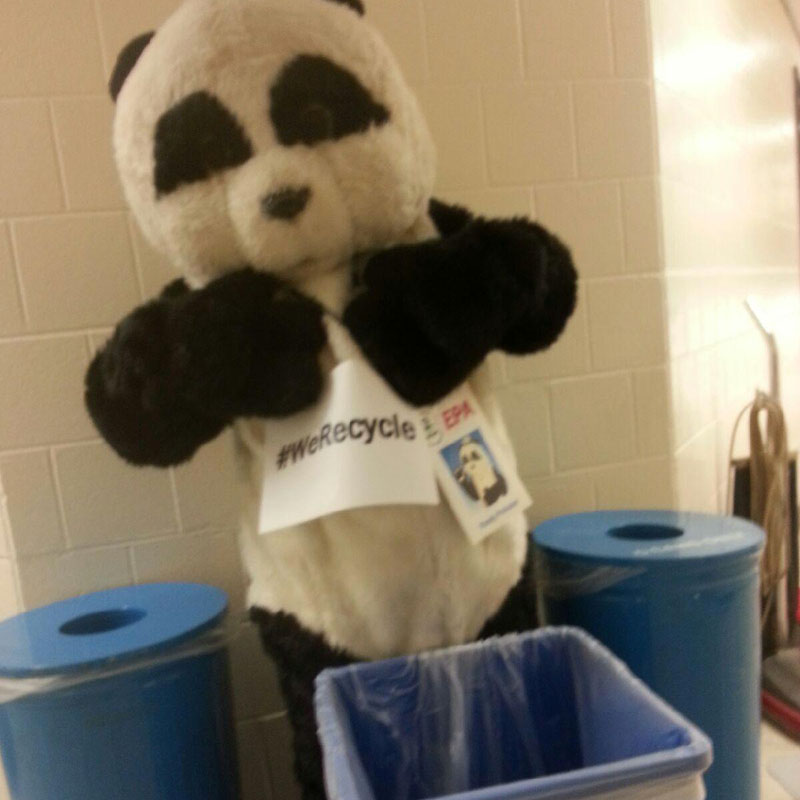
Pandy Pollution Recycles at EPA Cincinnati

At EPA, #WeRecycle. Learn how you can too: www2.epa.gov/recycle